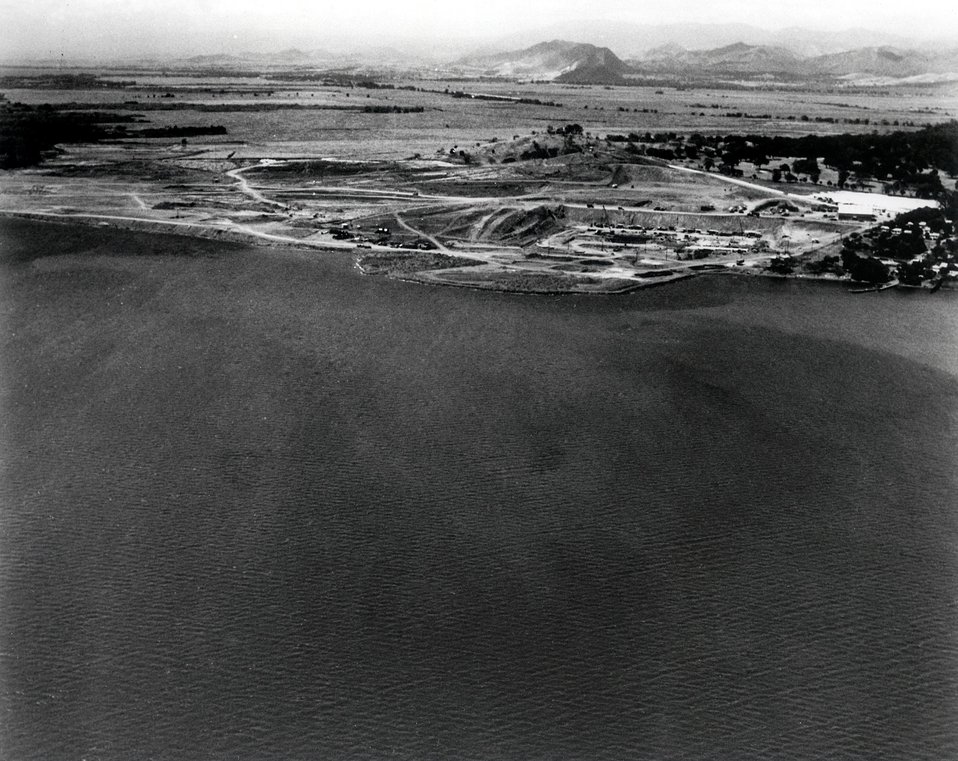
Aerial view of Bay of Jobos in southern Puerto Rice shows dye flowing with the currents of the Bay. Circa 1972.